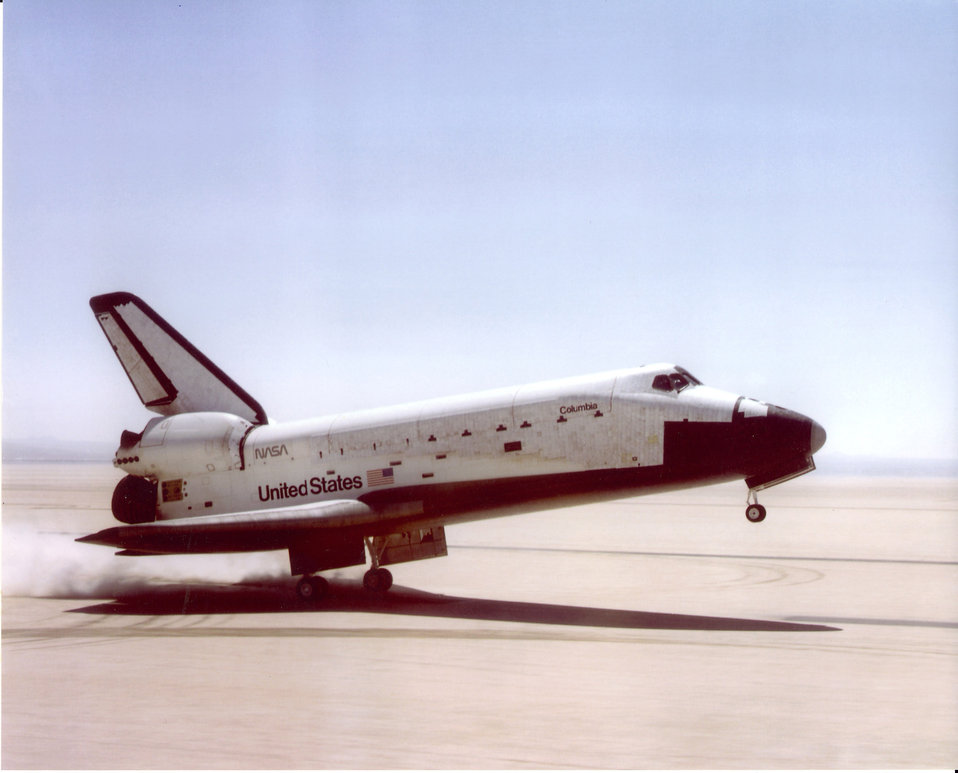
Columbia lands in 1981

The Space Shuttle Columbia landed on Rogers Dry Lake at Edwards Air Force Base, Calif., at the conclusion of its first orbital mission April 14, 1981.